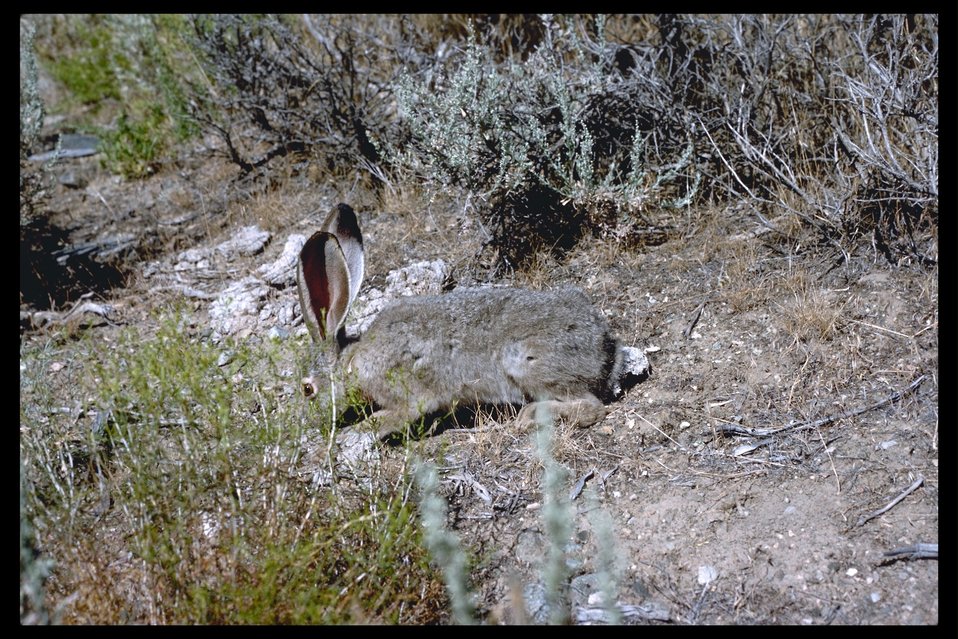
A foraging jack rabbit at Pueblo Mountain WSA. (WSA 2-81)